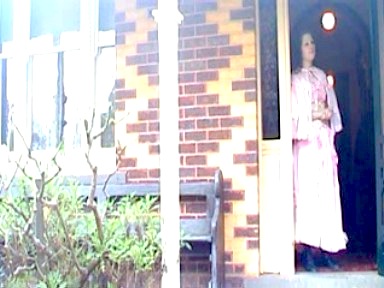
'The Pink Lady' a film based on a true ghost story of Newstead House, Queensland, first screened at Rosebud Village Cinemas, 2003